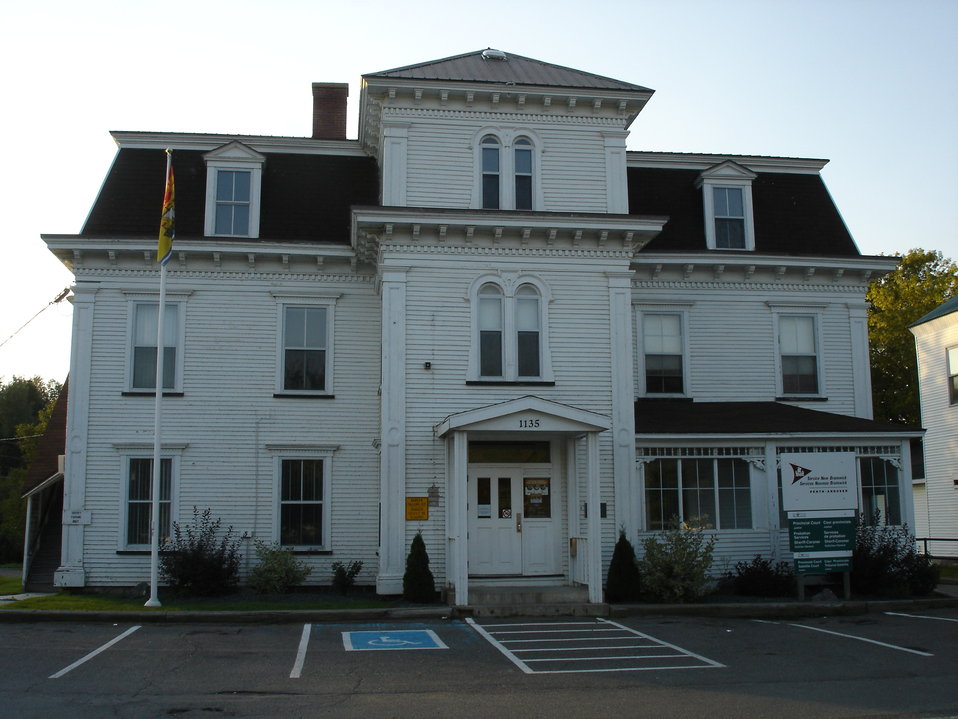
Victoria County Court House, Perth-Andover (New Brunswick)